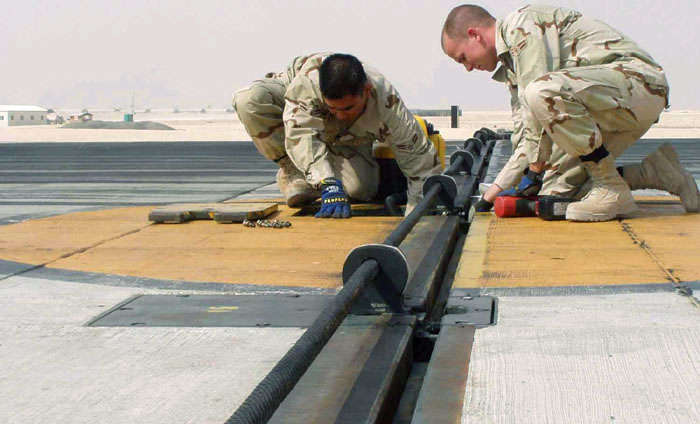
End of the line

SOUTHWEST ASIA -- Airmen 1st Class Peter Estrellado (left) and Kevin Facteau maintain the arresting cable of an active runway at a forward-deployed location. Both Airmen are assigned to the 379th Air Expeditionary Wing and are deployed from Seymour Johnson Air Force Base, N.C.